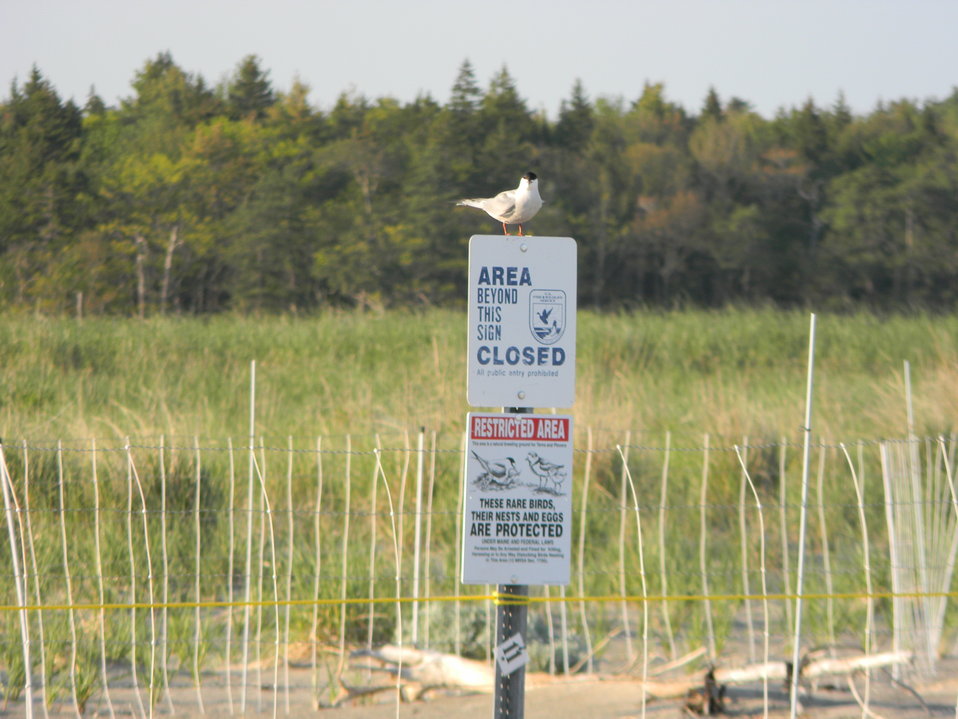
Roseate Tern on Refuge Sign at Rachel Carson National Wildlife Refuge

Credit: Bri Rudinsky/USFWS

www.fws.gov/refuge/rachel carson/